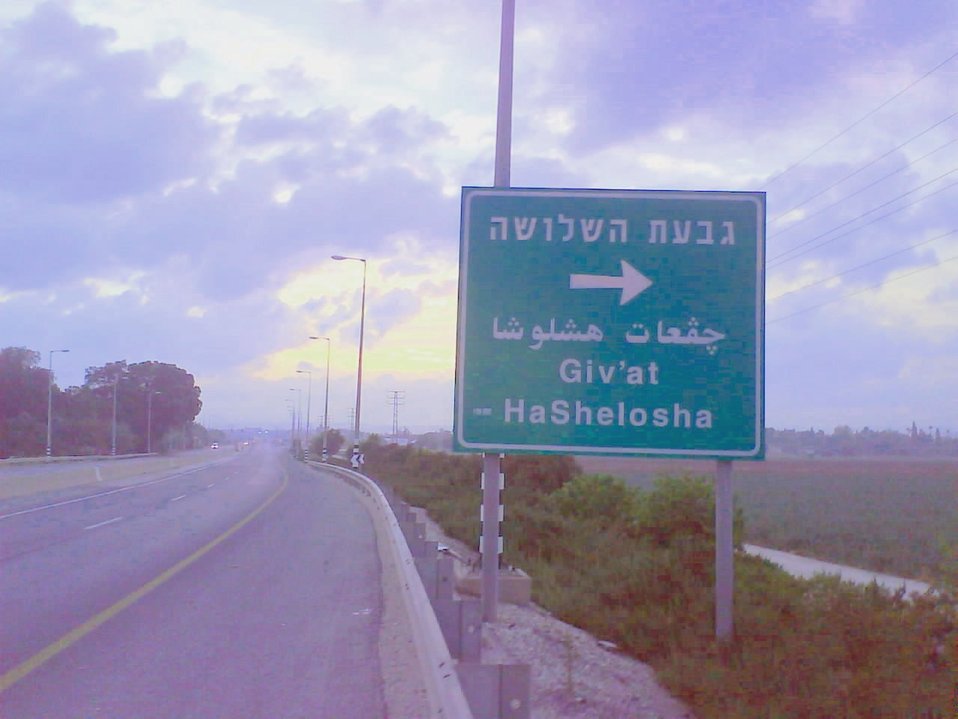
Русский: Гиват ха-Шлоша